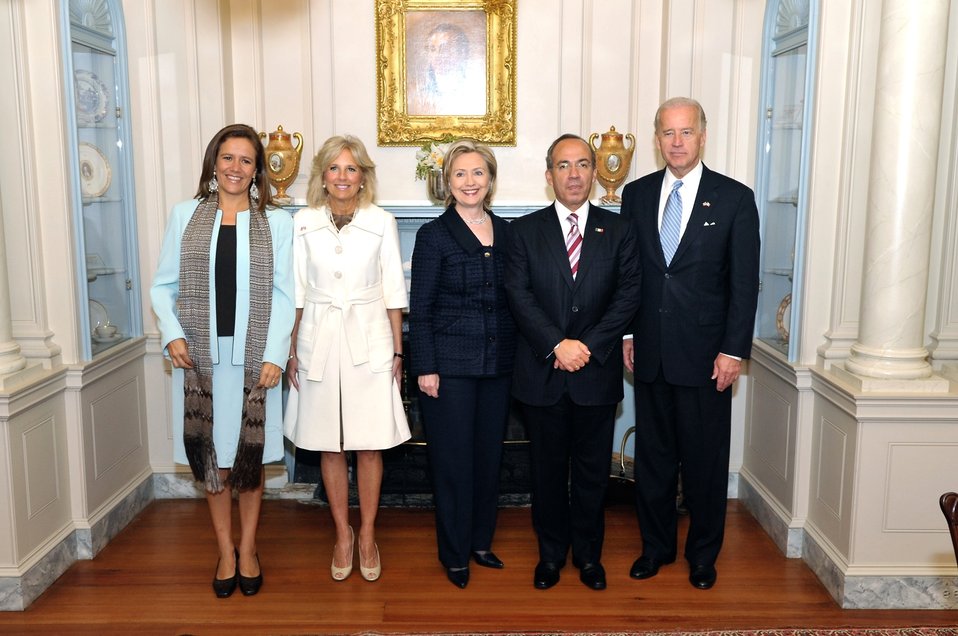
Secretary Clinton and Vice President Biden Co-Host Luncheon for Mexican President Calderon and Mrs. Zavala

U.S. Secretary of State Hillary Rodham Clinton and U.S. Vice President Biden and Dr. Biden co-host a luncheon in honor of Mexican President Felipe Calderon Hinojosa and Mrs. Margarita Zavala in the Franklin Room at the U.S. Department of State, May 19, 2010.